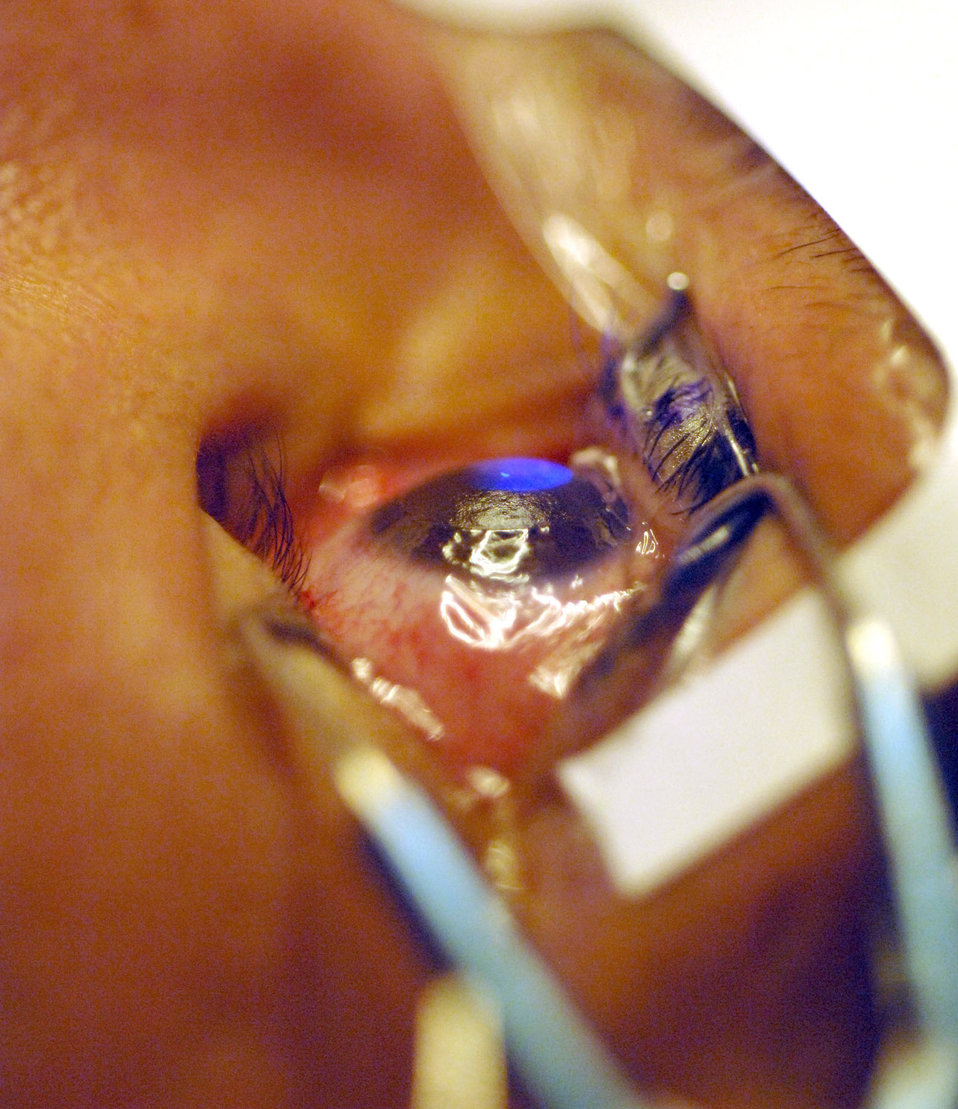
Cornea transplant

A refractive surgery laser shines blue on a patient's cornea as it corrects their vision on Nov. 3, 2010, at Lackland Air Force Base, Texas.